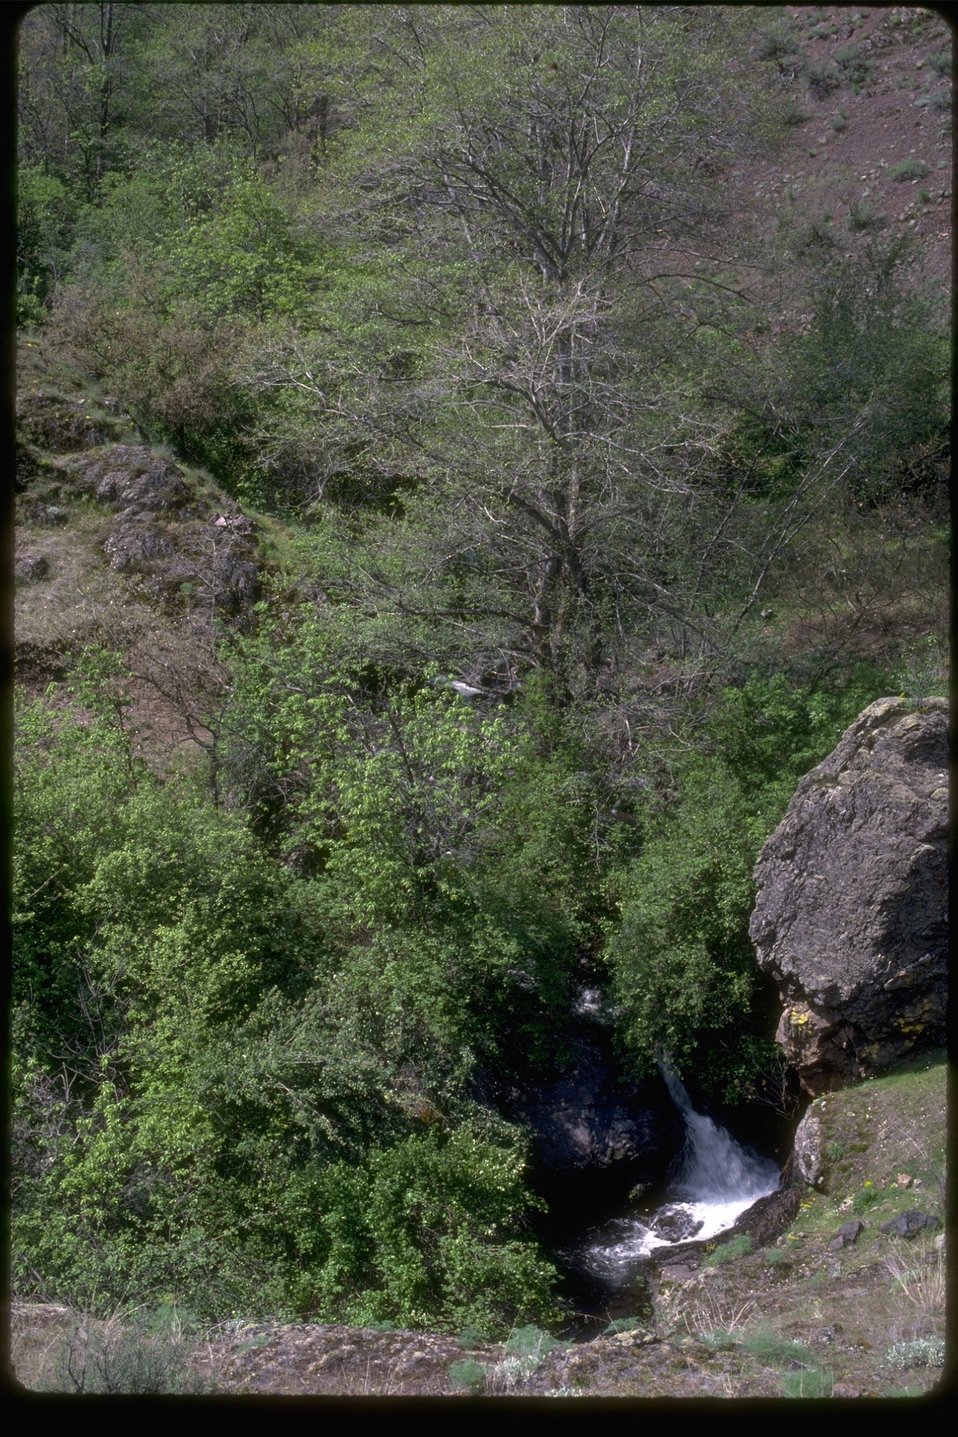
The riparian area surrounding Nelson Creek in the McGraw Creek Wilderness Study Area. OR 6-1